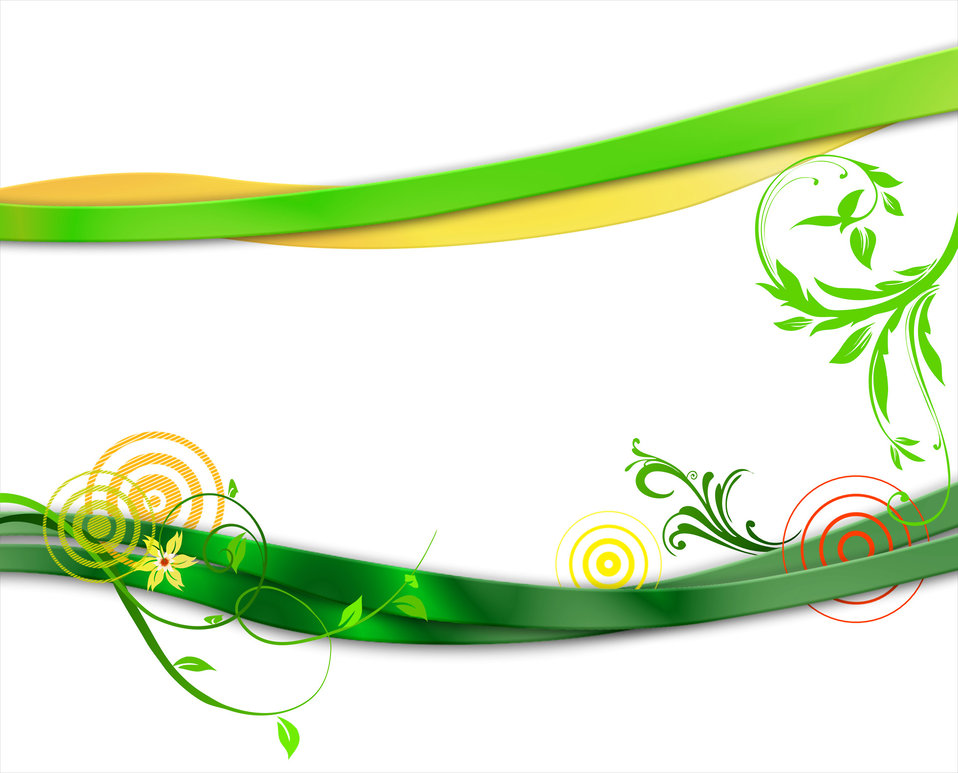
Spring frame collage

Spring frame for card.